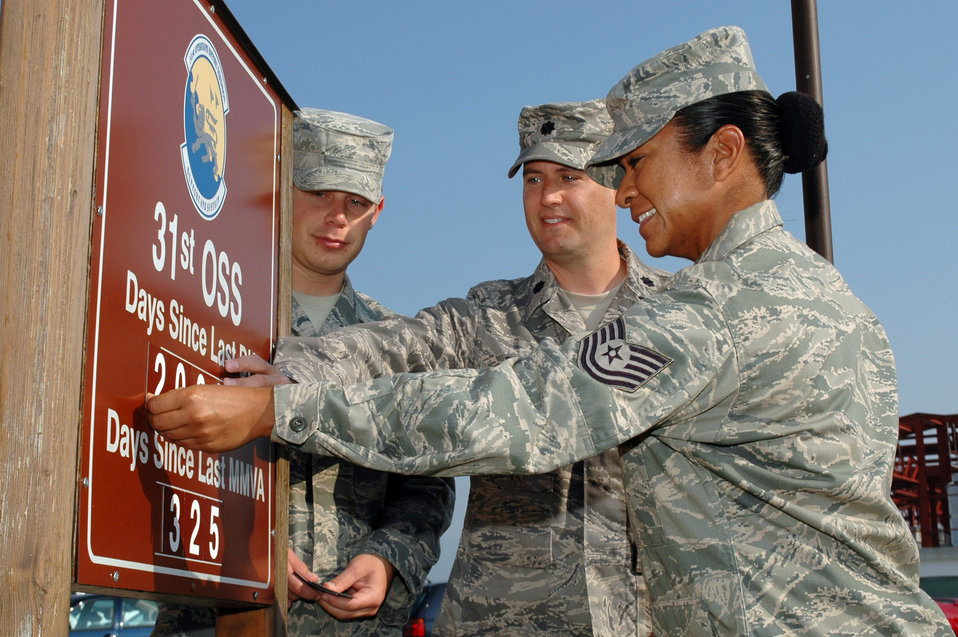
Smart driving choices make a world of difference

Lt. Col. Sean DeWitt, Tech. Sgt. Gracey Martinez and Airman 1st Class Andrew Meyer update their unit's driving under the influence and major motor vehicle accident sign Sept. 28, 2009, to the 2,000th day since a DUI at Aviano Air Base, Italy. The commander had the two Airmen who've been assigned to the unit the longest, that being Sergeant Martinez, and the least, Airman Meyer, update the sign with him as some sort of passing of the torch in keeping safety at the forefront of everyone's mind in the unit. Colonel DeWitt is the 31st Operations Support Squadron commander.